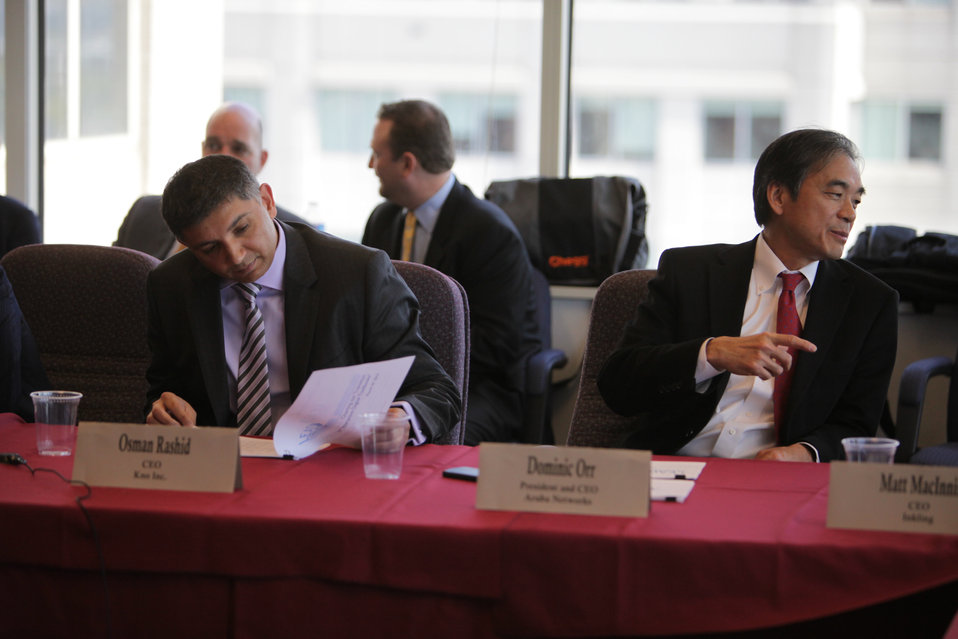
FCC Chairman Host Leaders From the Digital Education Ecosystem

CEO of Kno, Inc, Osman Rashid attends FCC Chairman's event at FCC's HQ in Washington, DC on March 29, 2012.